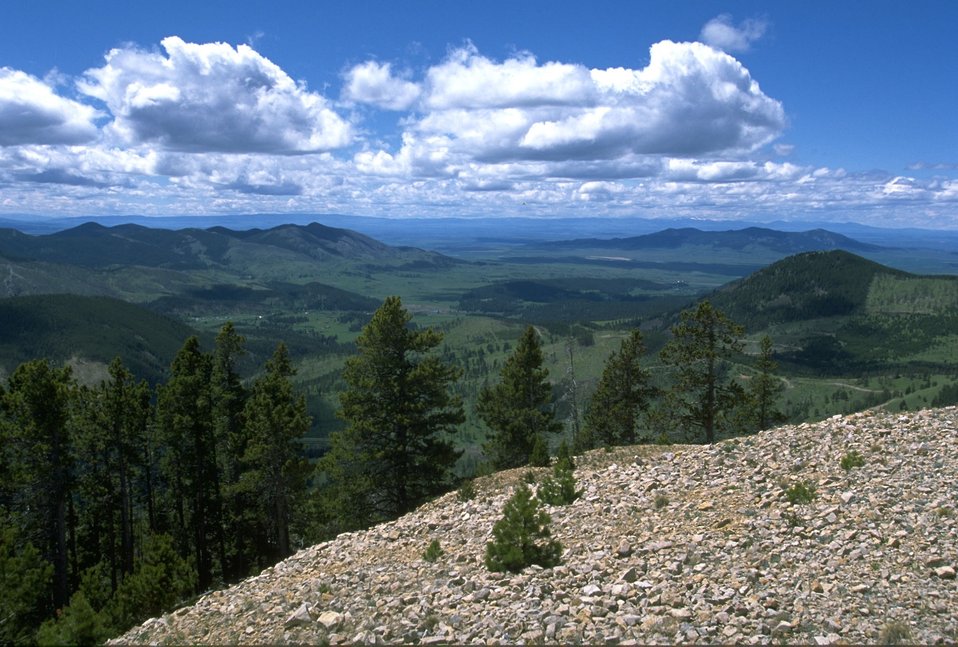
Looking down on a valley in the Judith Mountains